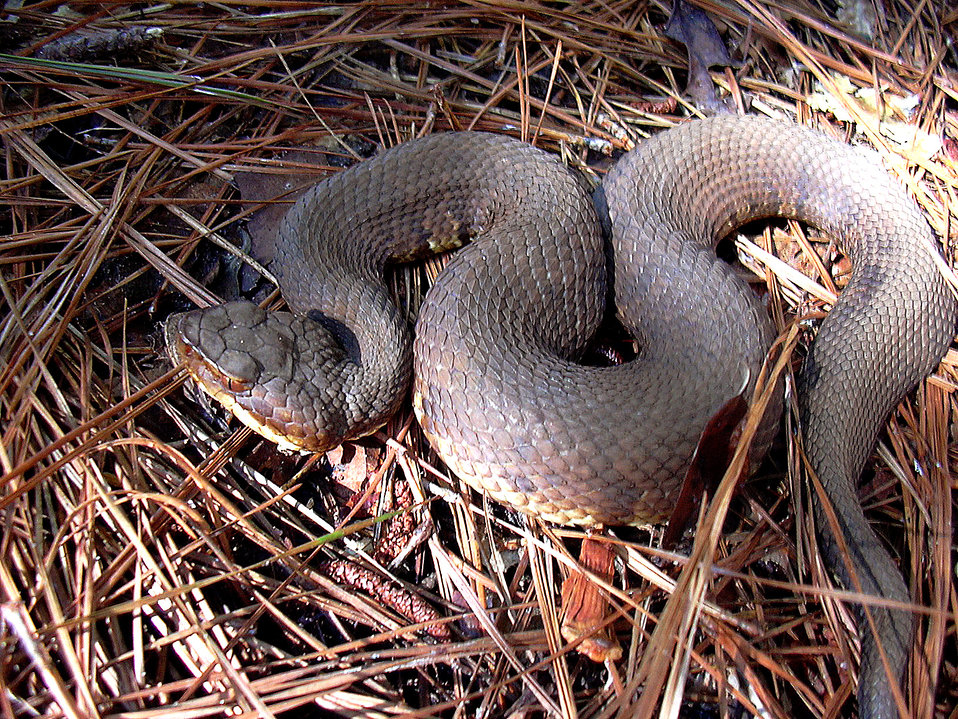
This photograph depicted a dorsal oblique view of a 'western cottonmouth' snake Agkistrodon piscivorus leucostoma. The cottonmouth snakes display a distinct two-tone coloration, the spade-like shaped head, a lateral positioning of the eyes, vertically elliptical pupils, cheek stripes, and loreal pits. All of the American copperheads, cottonmouths and rattlesnakes are members of the family 'viperidae'. The western cottonmouth is the smallest, but most widely distributed cottonmouth subspecie. The dorsal body is patterned with 10 to 15 dark cross-bands similar to the other two subspecies, but often tends to darken at an early age. The top and sides of the snout are usually uniformly dark brown to black with no visible pattern except in juveniles. When visible, the upper side of the dark cheek stripe often lacks the contrasting light borders that are characteristic of the Florida and eastern subspecies (Gloyd and Connant, 1990).